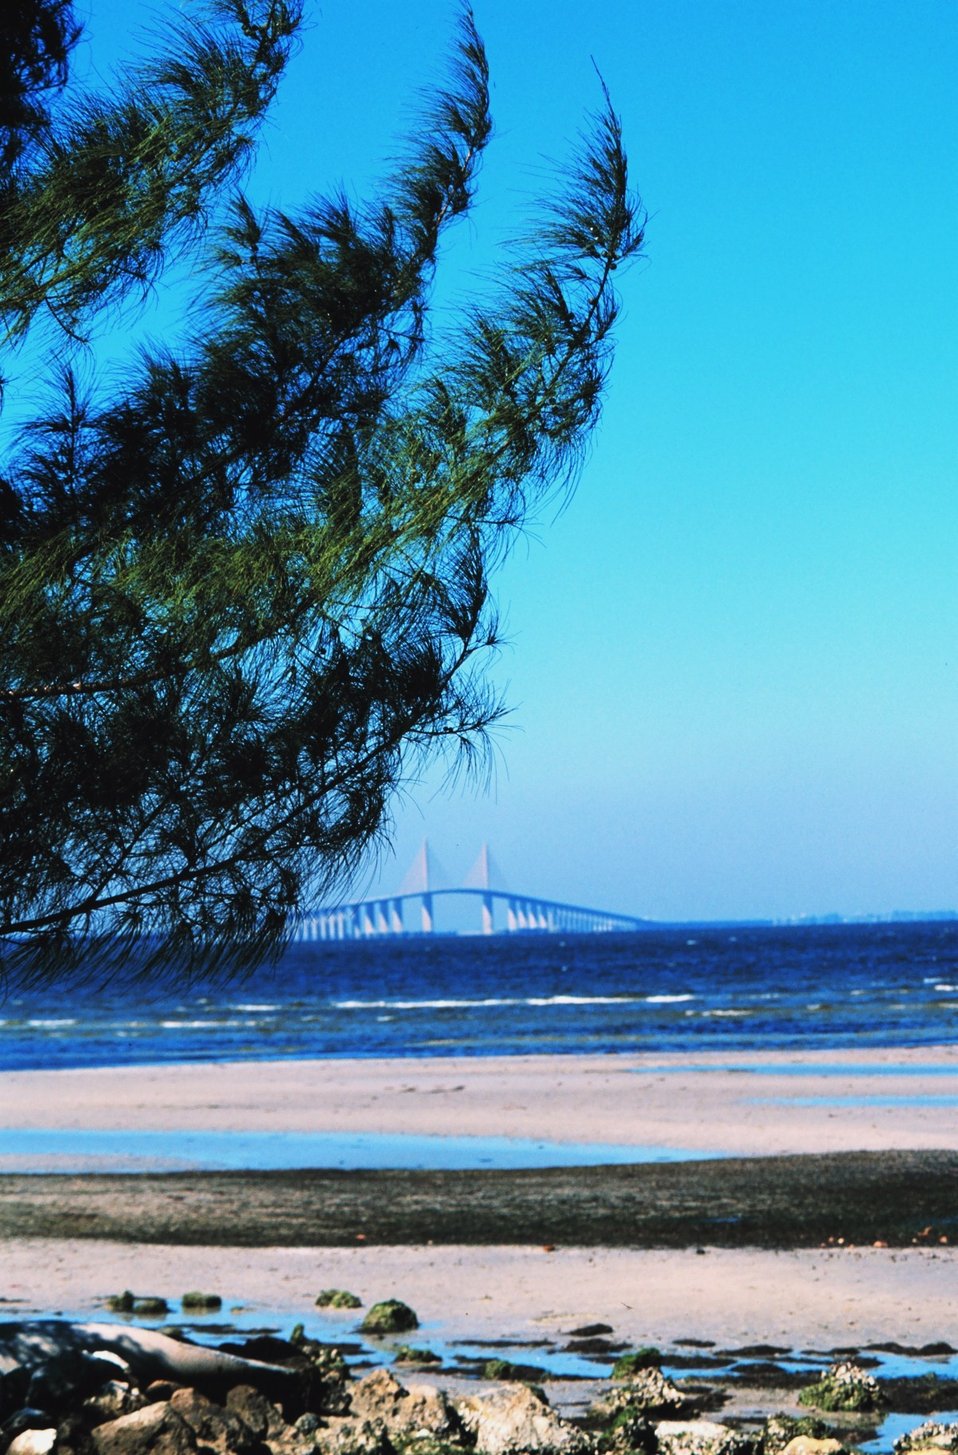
The Sunshine Skyway Bridge looking across the tidal flats towards St. Petersburg